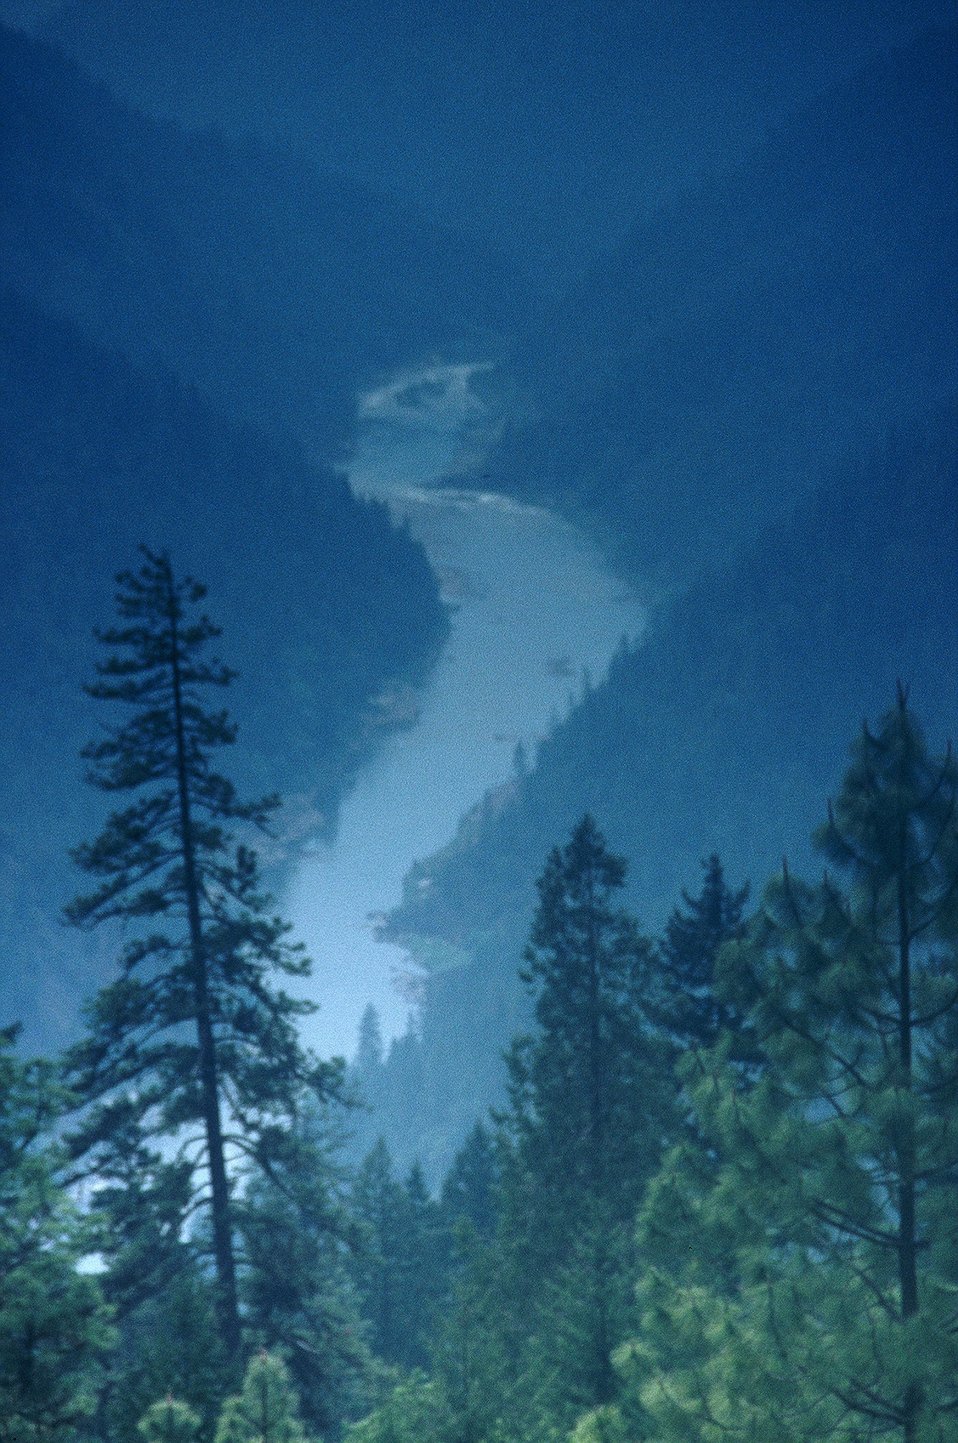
Wild section of the Rogue River from Grave Creek to Foster Bar May 19 to May 22.